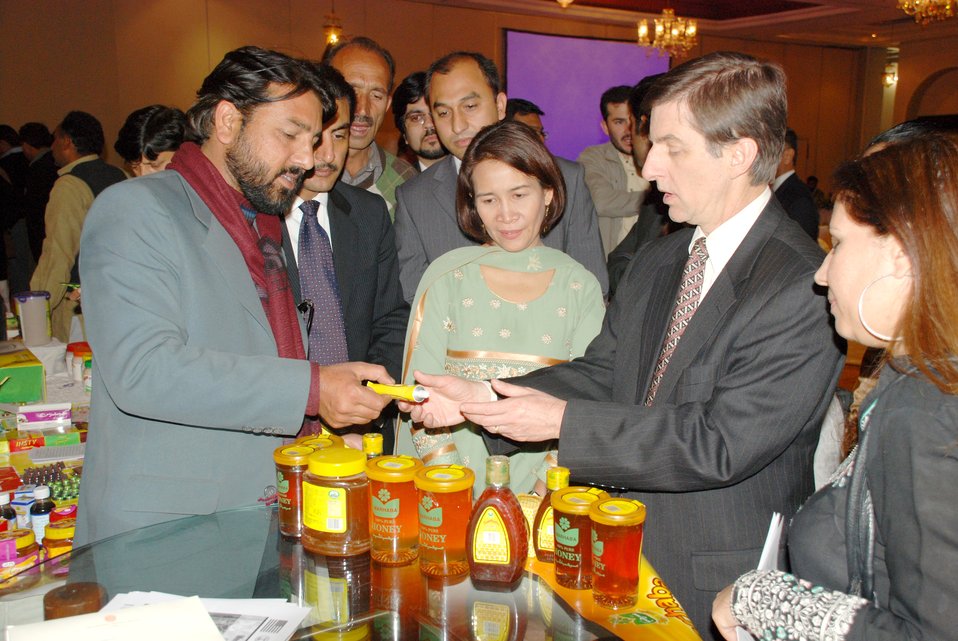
Industry Conference- Medicinal Plants and Honey

USAID Mission Director, Andrew Sisson talking to the Honey manufacturer